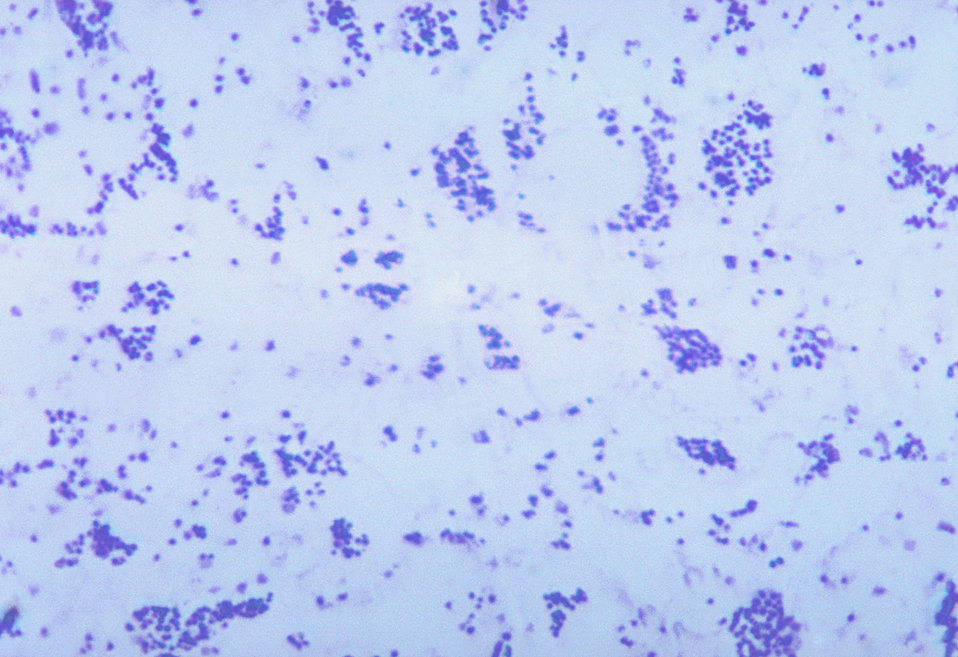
This is a photomicrograph of Francisella tularensis bacteria using a methylene blue stain.